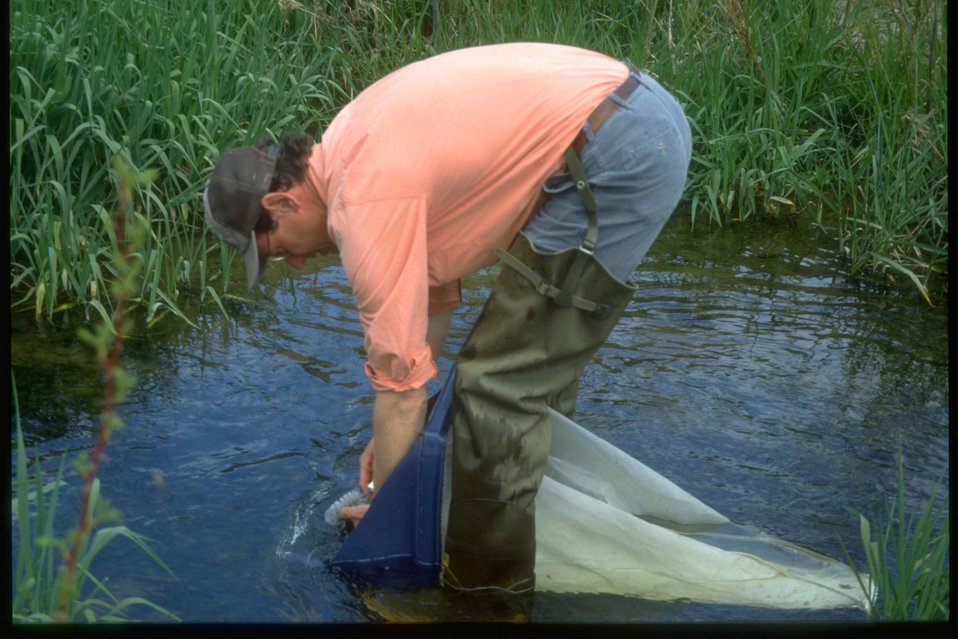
Sampling aquatic macro invertabrates in Douglas Creek.